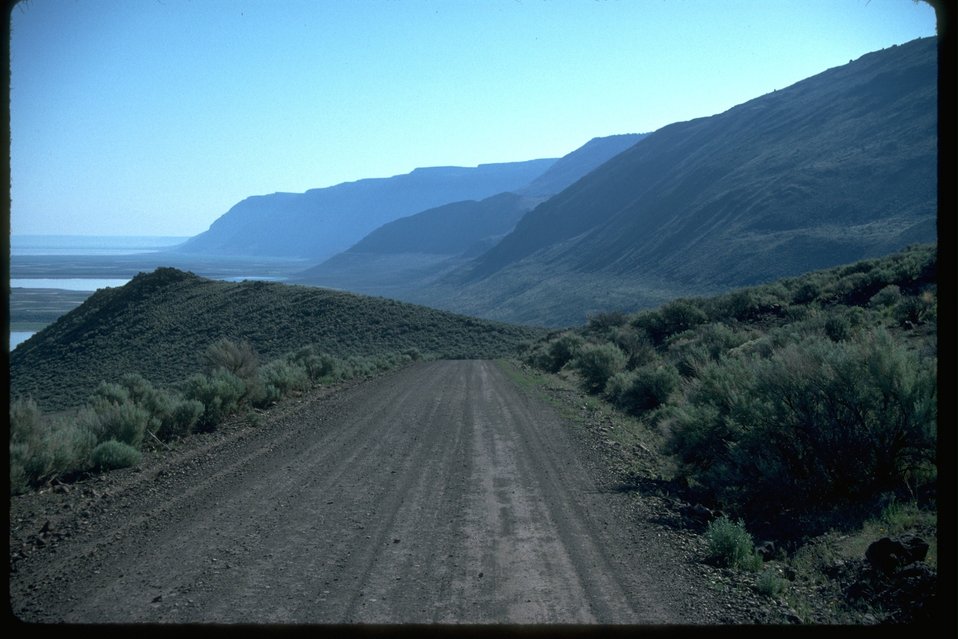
The byway at Poker Jim Ridge.